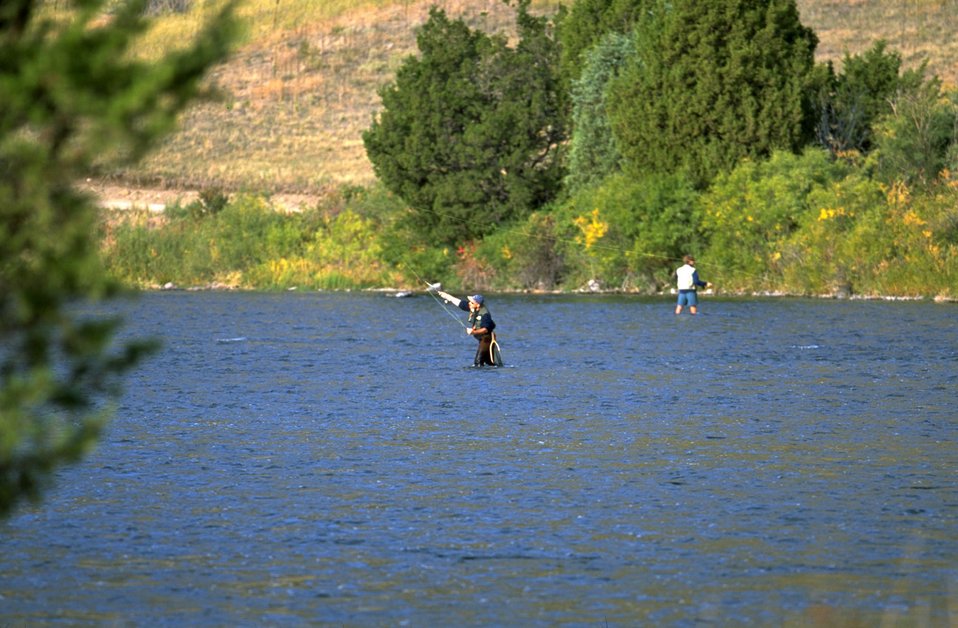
Fishermen on the Madison